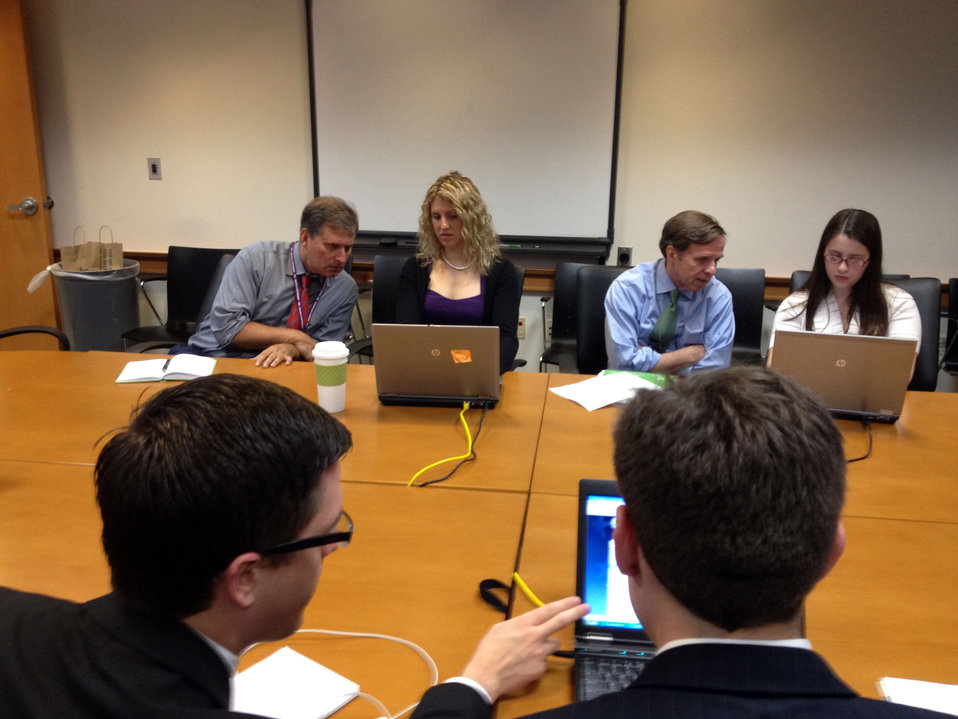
Assistant Secretary Posner Participates in a Live Facebook Chat

Assistant Secretary of State for Democracy, Human Rights and Labor Michael Posner responds to your questions live in a Facebook chat on May 25, 2012.